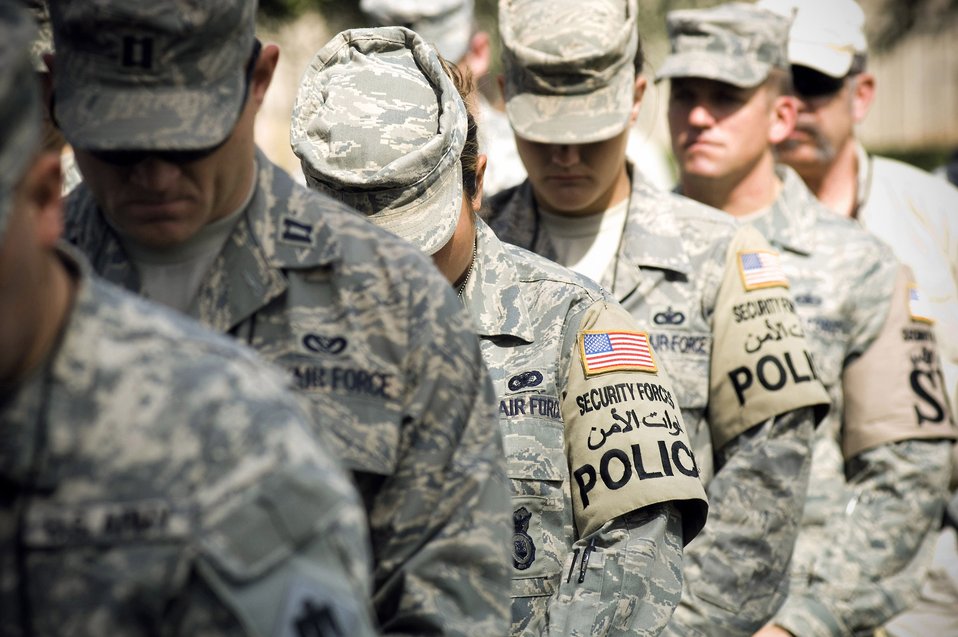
We remember

Airmen gather in a Memorial Day ceremony held at the U.S. Embassy annex at Baghdad's International Zone on May 26.